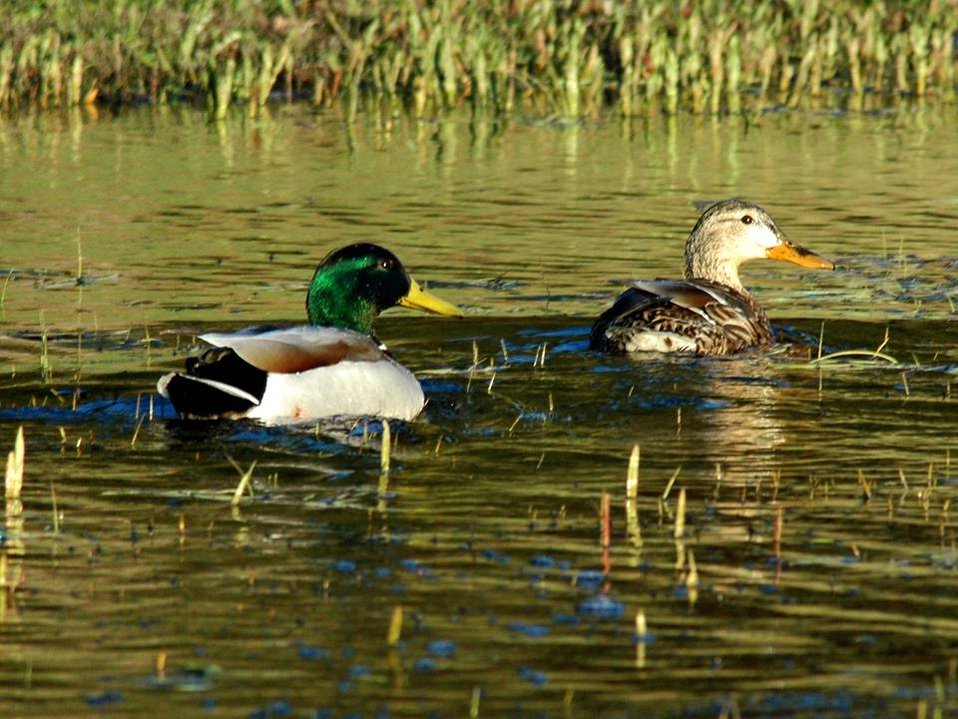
Mallards

A pair of mallards on a cropped wetland.